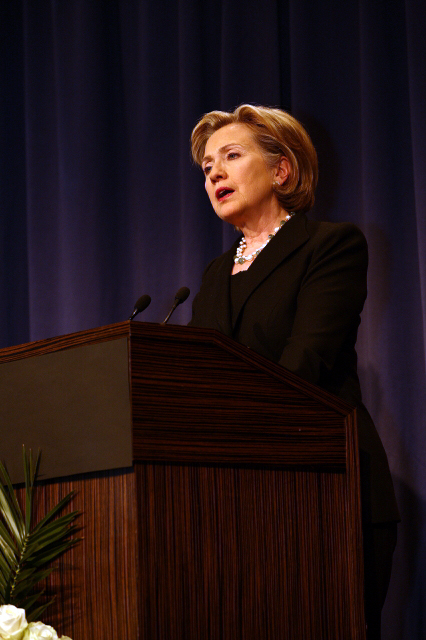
Press Conference With Russian Foreign Minister

Press conference after dinner meeting between U.S. Secretary of State Hillary Rodham Clinton and Russian Foreign Minister Sergey Lavrov in Geneva, Switzerland March 6, 2009.